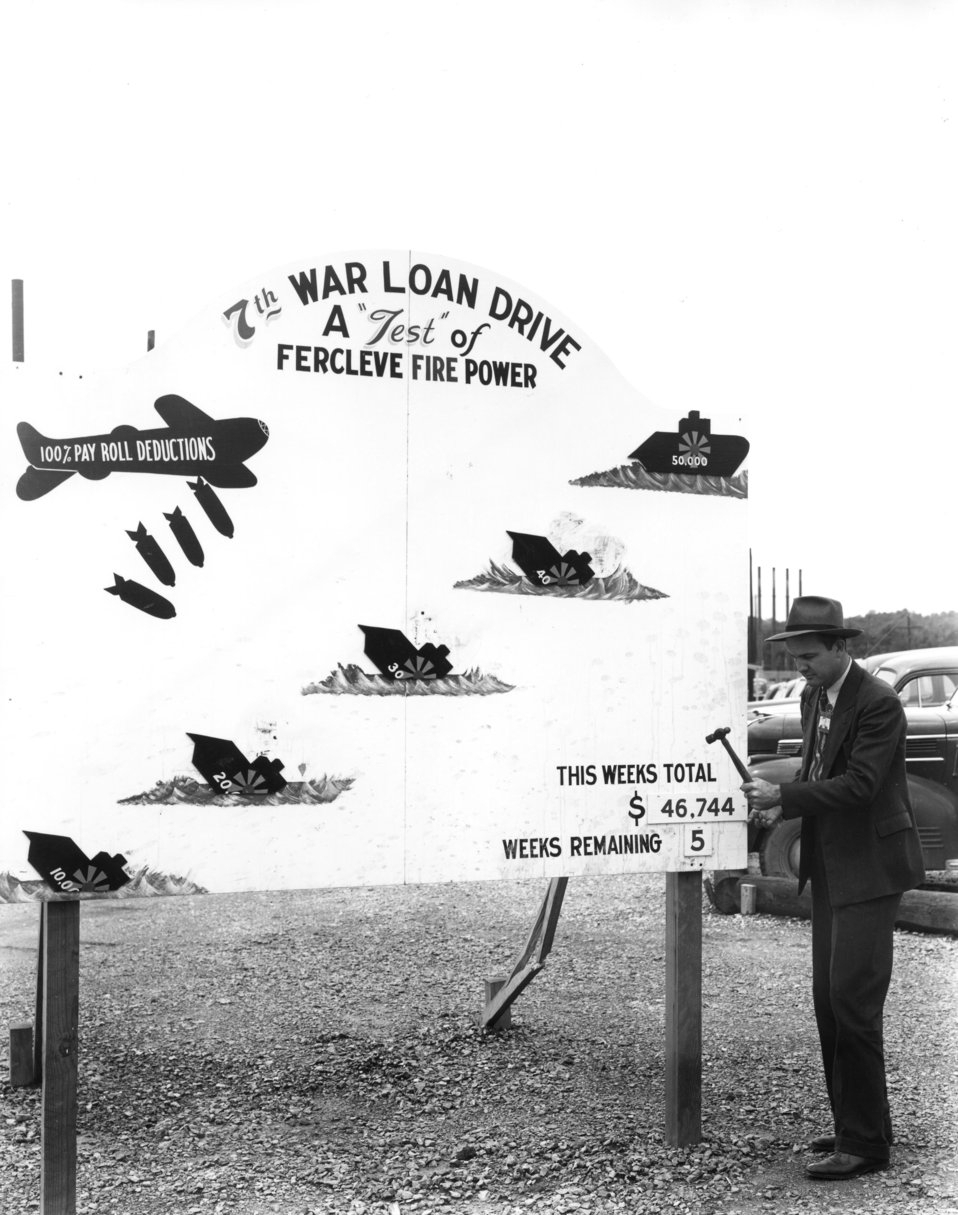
Army Activity at Oak Ridge